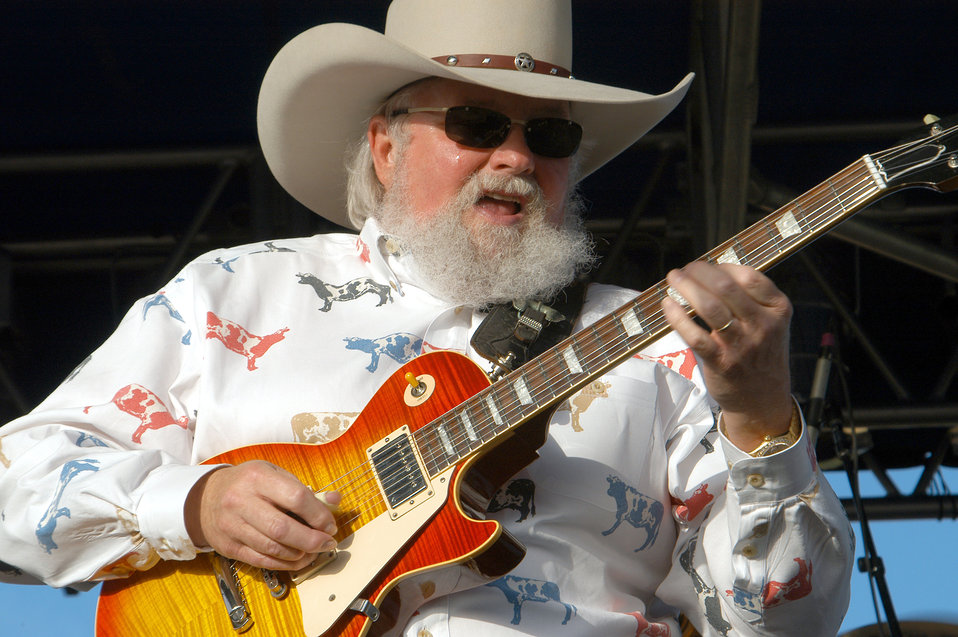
Daniels went down to Dyess

DYESS AIR FORCE BASE, Texas -- Country music artist Charlie Daniels performs